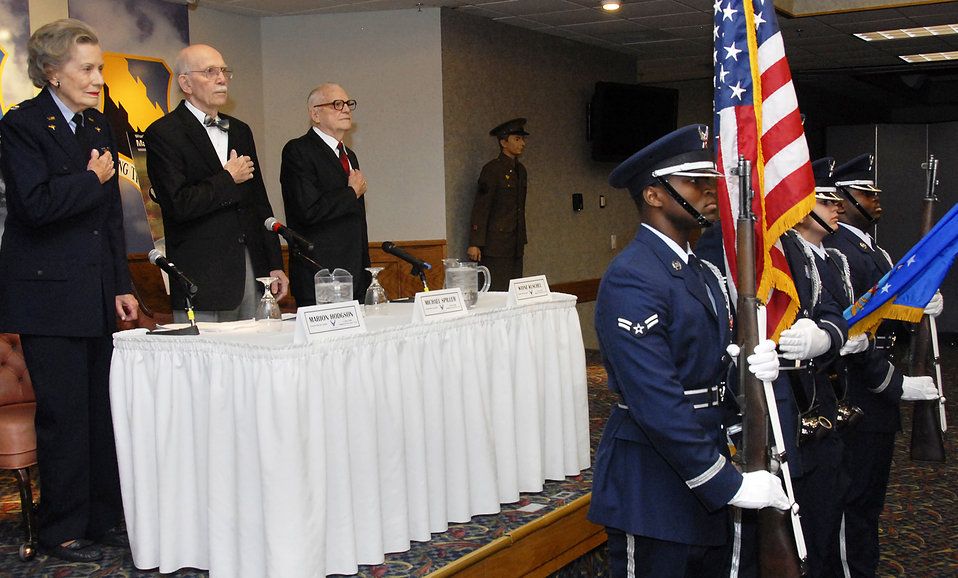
World War II aviators share stories, experiences

World War II pilots (from left on stage) Marion Stegeman Hodgson, Michael Spiller and Wayne Kuschel pay respect to the national anthem March 31 during